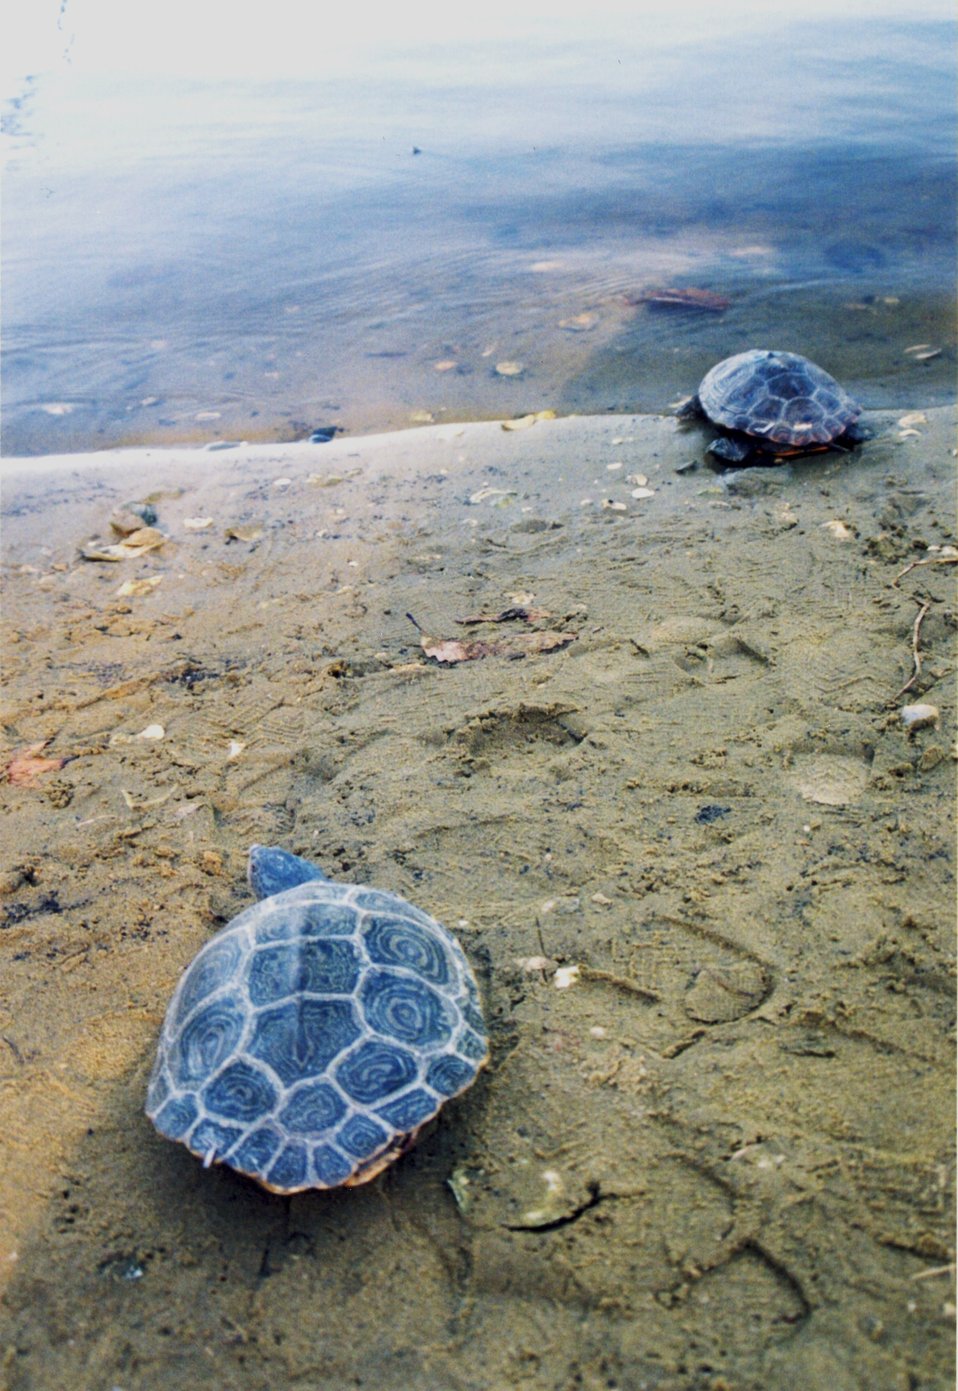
Terrapin on beach